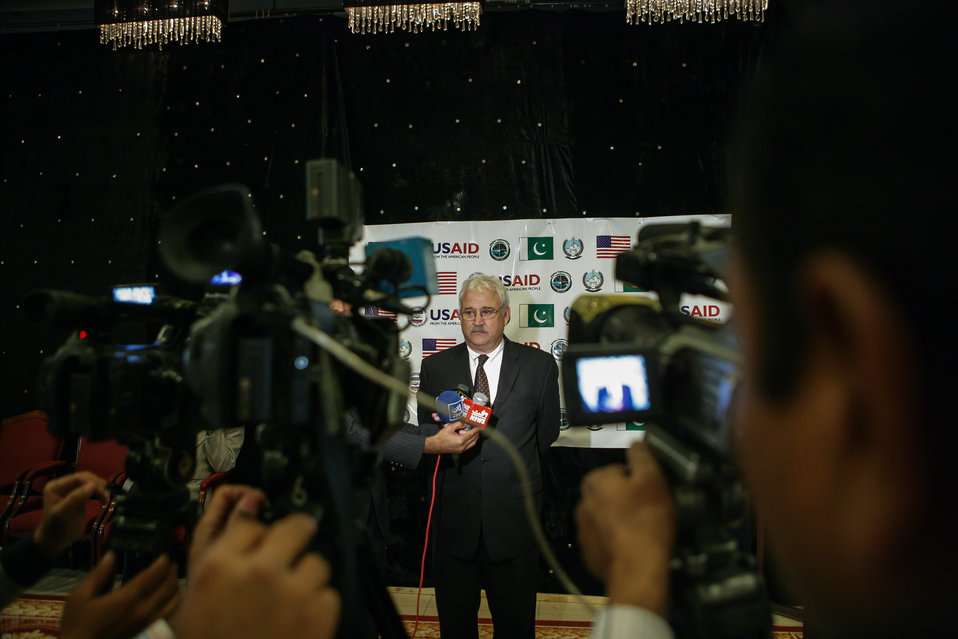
Graduation event of USAID Firms Project's Malakand Small and Medium Enterprises (SME) Recovery Assistance Program

Mr. Alan Davis, Director Economic Growth and Agriculture, USAID, speaks to the media after the event